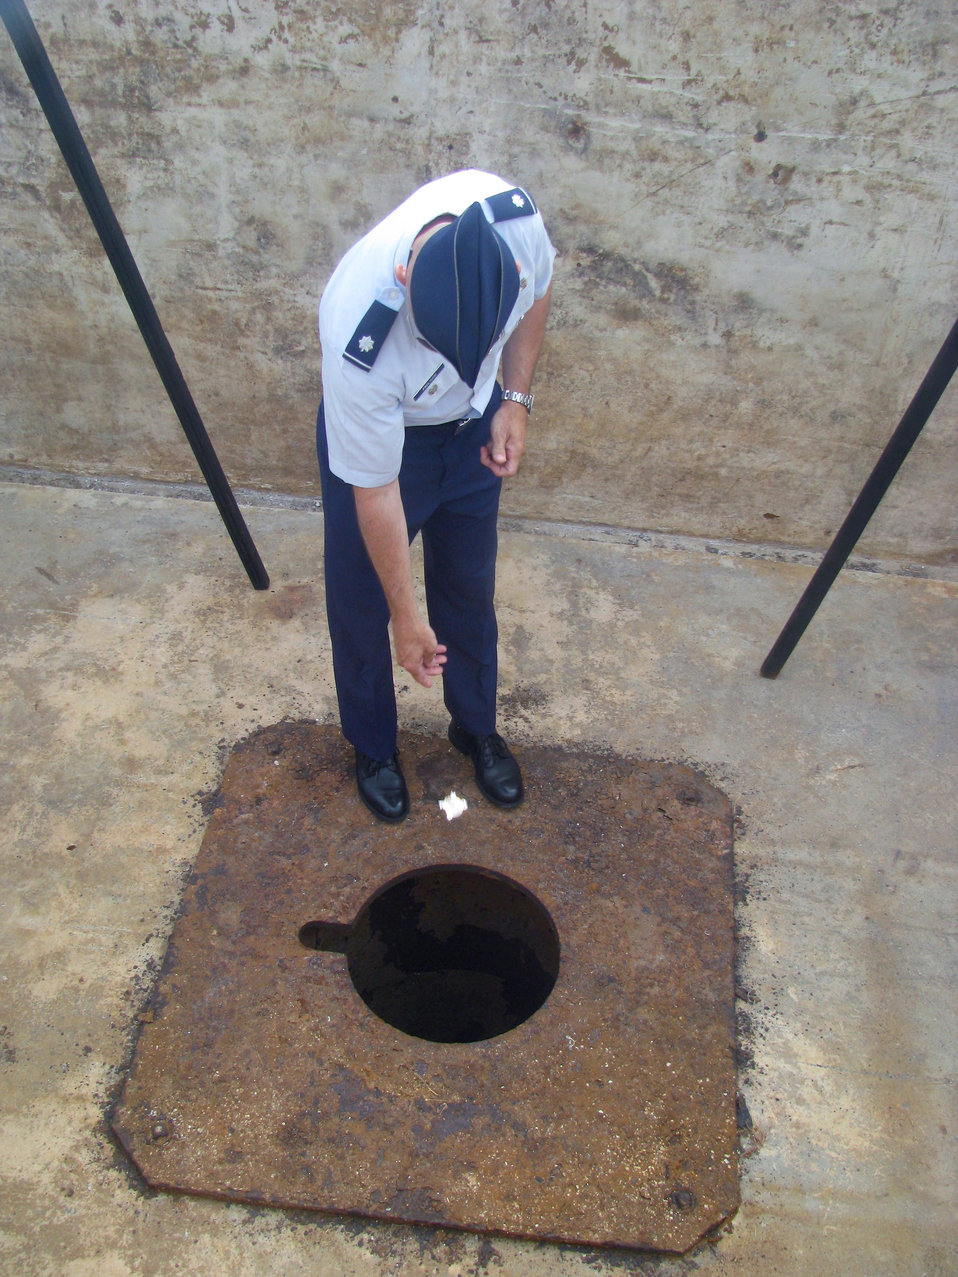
VCSAF describes airpower's key role in Pacific at Tinian symposium

Lt. Col. Richard Pagliuco drops a 20th Air Force coin in the pit used to load atomic bombs onto B-29 Superfortresses at the end of World War II, shortly before a wreath-laying ceremony Aug. 6, 2010, in Tinian, Commonwealth of Northern Northern Mariana Islands. Local officials invited him and a 509th Bomb Wing representative to place unit coins in the bomb pit during a commemoration of Tinian's role in World War II. Colonel Pagliuco is the 20th Air Force deputy director of operations at F.E. Warren Air Force Base, Wyo.